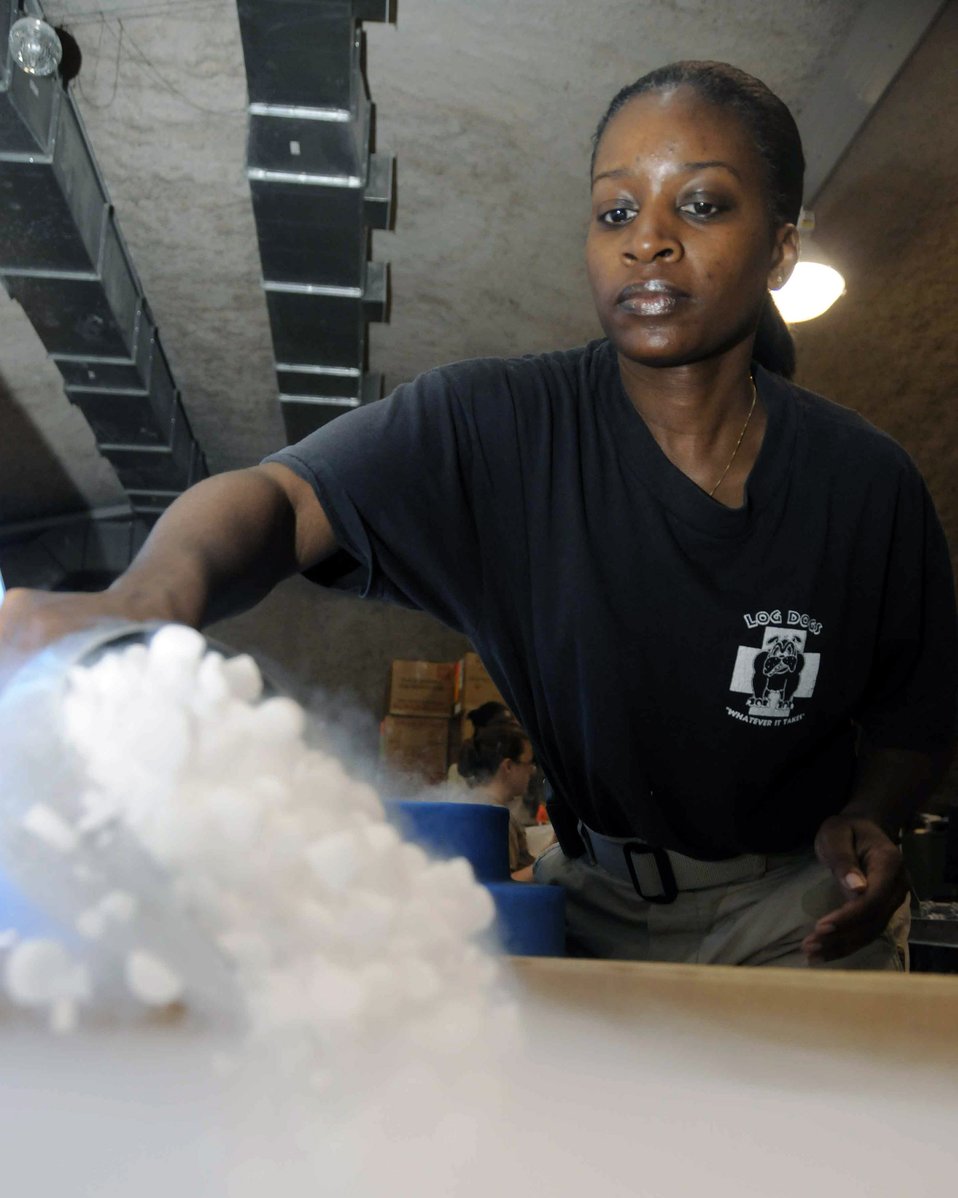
Bloodline for AOR

Tech. Sgt. Paula Todd scoops dry ice into a box used for shipping blood May 6 at the Blood Transshipment Center in Southwest Asia. Sergeant Todd is the NCO in charge of the BTC and is responsible for inventory and shipment of blood products throughout the Persian Gulf region.